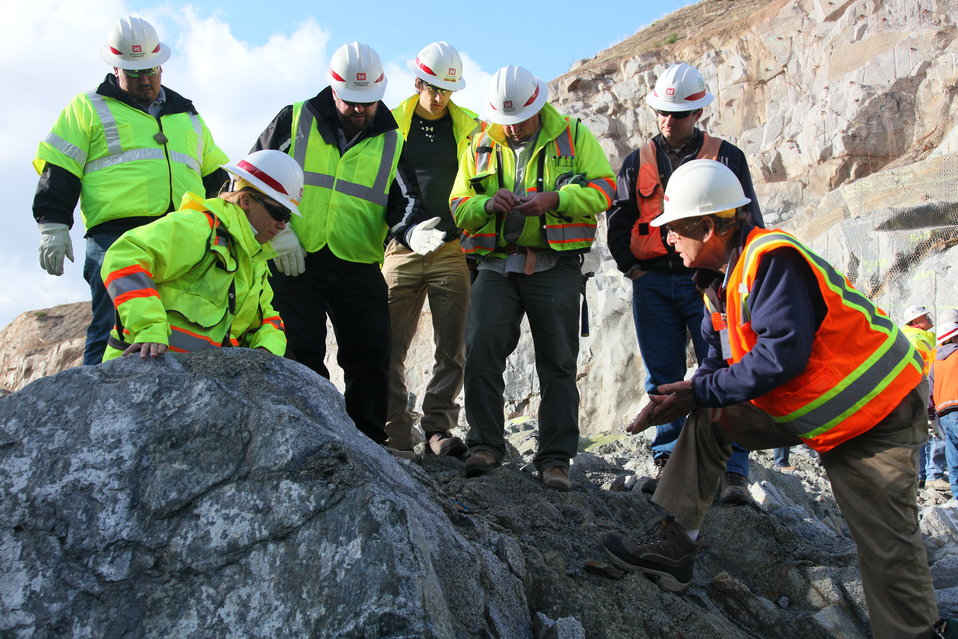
Evaluating the Folsom Dam auxiliary spillway foundation

A team of geologists from the U.S. Army Corps of Engineers Sacramento District led by Coralie Wilhite (front left) and consultant Dr. Richard Goodman (front right), a retired professor of geology and rock mechanics at the University of California – Berkeley, examines the excavation site for the Folsom Dam auxiliary spillway in Folsom, Calif., Feb. 29, 2012. Goodman was part of a consultant review board hired to evaluate the integrity of the spillway’s foundation - a requirement for Corps’ civil works construction projects intended to reduce risk to lives to ensure they meet the highest safety standards. The spillway will allow Folsom Dam to release water sooner and more safely. The project is part of the Folsom Dam Joint Federal Project, a joint effort of the U.S. Army Corps of Engineers Sacramento District, the U.S. Bureau of Reclamation, the Central Valley Flood Protection Board and the Sacramento Area Flood Control Agency to improve the safety of the dam and reduce flood risk for the greater Sacramento area.